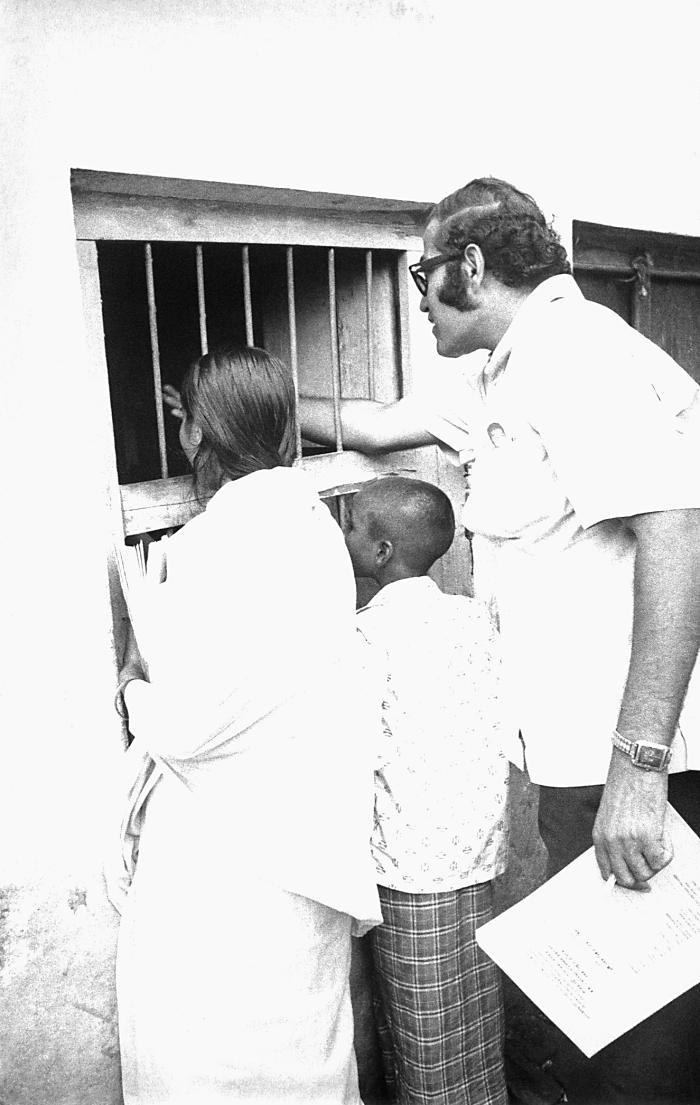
This photograph depicted World Health Organization (WHO) epidemiologist Dr. Ali Mourad working with community members as they investigated each home in what had been identified as a smallpox-infected village.In 1968, the World Health Organization (WHO), and other world public health organizations - led by the United States and the then-Soviet Union - came together to join in the fight to eradicate smallpox from the world. The worldwide eradication of this dreaded virus was due to this Smallpox Eradication Campaign, whereupon, a mass-vaccination program was instituted across the globe that lead to the declaration in 1978 by a global commission that smallpox had been eradicated, which was officially accepted by the 33rd World Health Assembly in 1980. Smallpox is a serious, contagious, and sometimes fatal infectious disease.